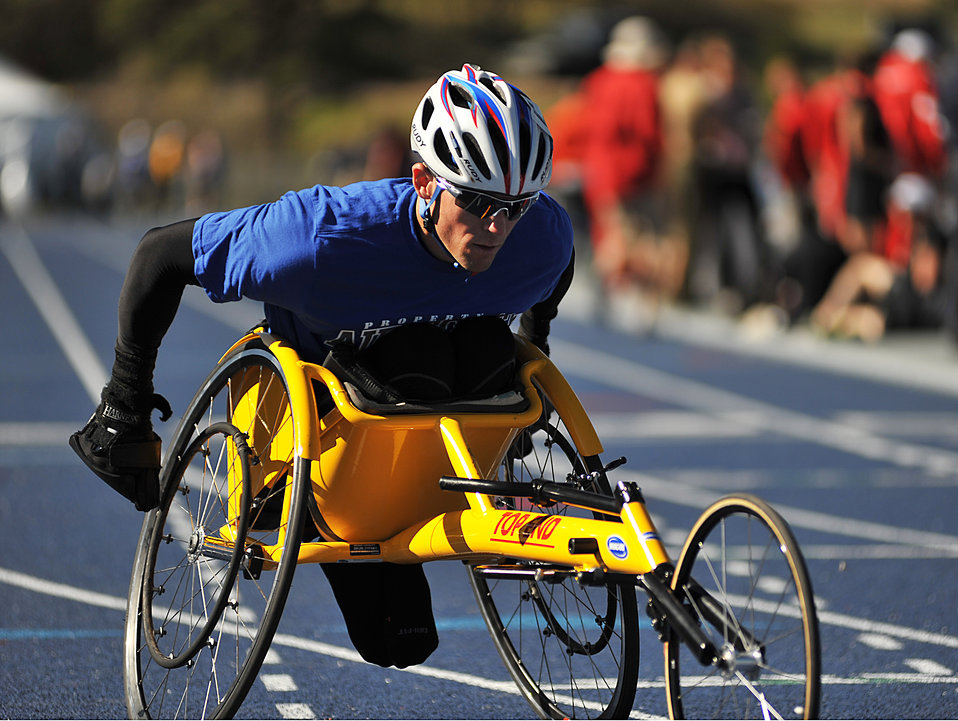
Warrior Games

Jeff Odom take part in the track and field competition of Warrior Games 2012 at the U.S. Air Force Academy in Colorado Springs, Colo., May 4, 2012.